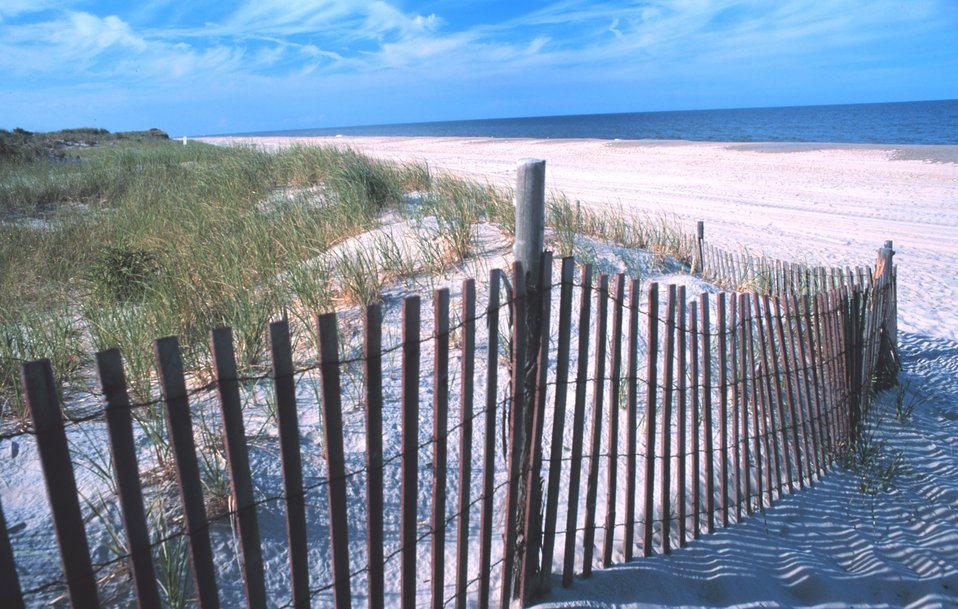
Looking from the dune line to the north at Delaware Seashore State Park